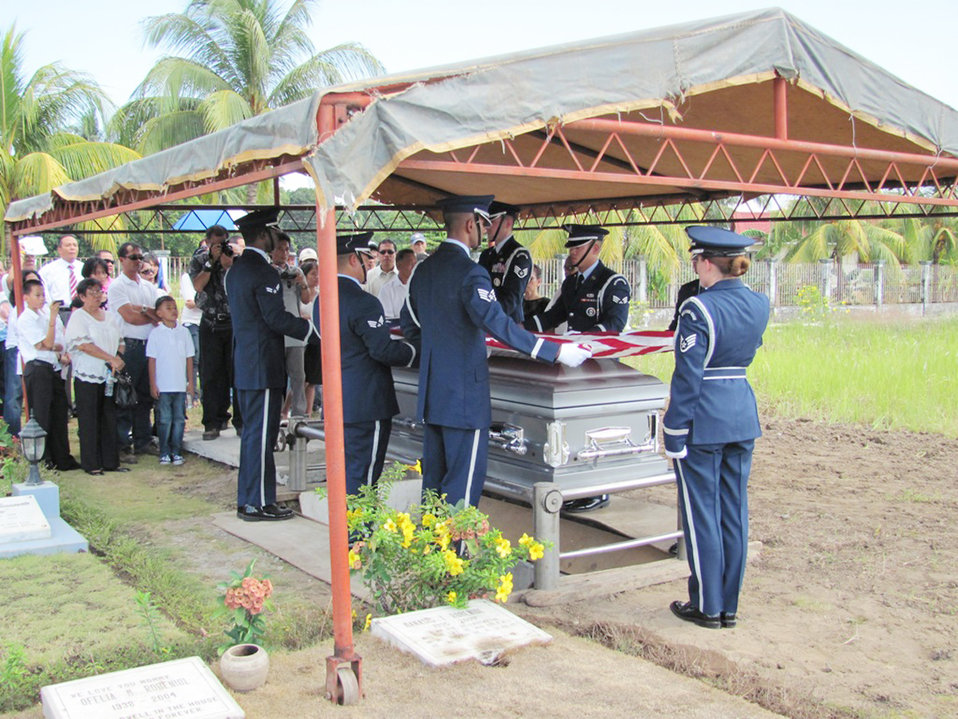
U.S., Philippine officials provide final resting place for Airman

Staff Sgt. Lacey Brown (right) salutes as members of the Kadena Air Base Honor Guard fold the American flag during a funeral for Tech. Sgt. Raymond Natividad April 27, 2010, in Bacolod, Philippines.